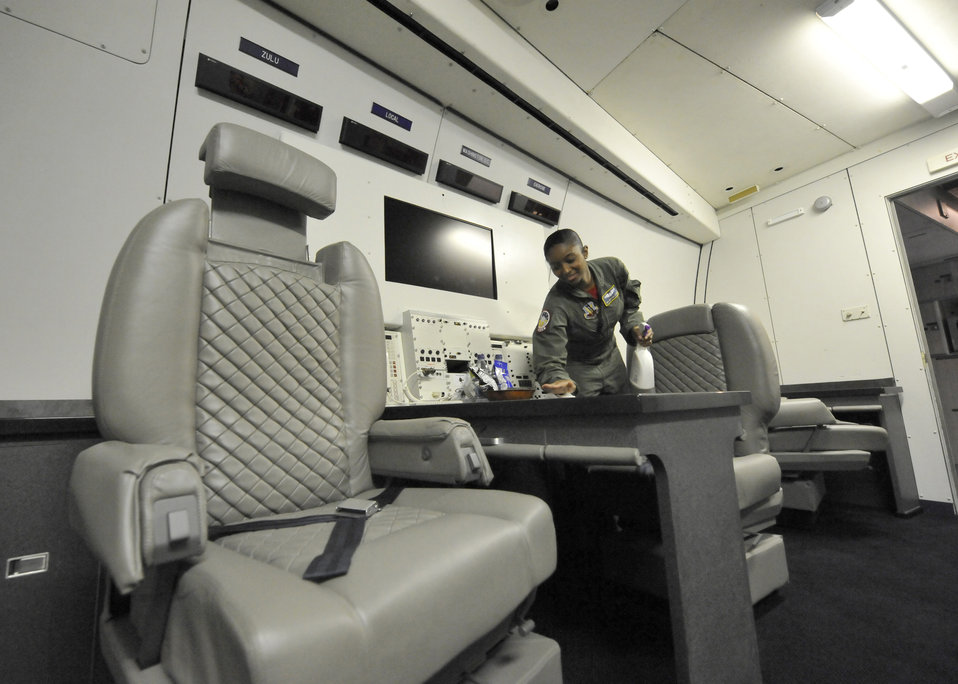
E-4B milestone

Staff Sgt. Krystal Lerohl, a flight attendant with the 1st Airborne Command and Control Squadron at Offutt Air Force Base, Neb., wipes off a table in the private quarters of an E-4B prior to a simulated alert mission. The E-4B serves as the National Airborne Operations Center for the president, secretary of defense and chairman of the Joint Chiefs of Staff. The aircraft passed a significant milestone this month by sitting alert constantly for more than 35 years.